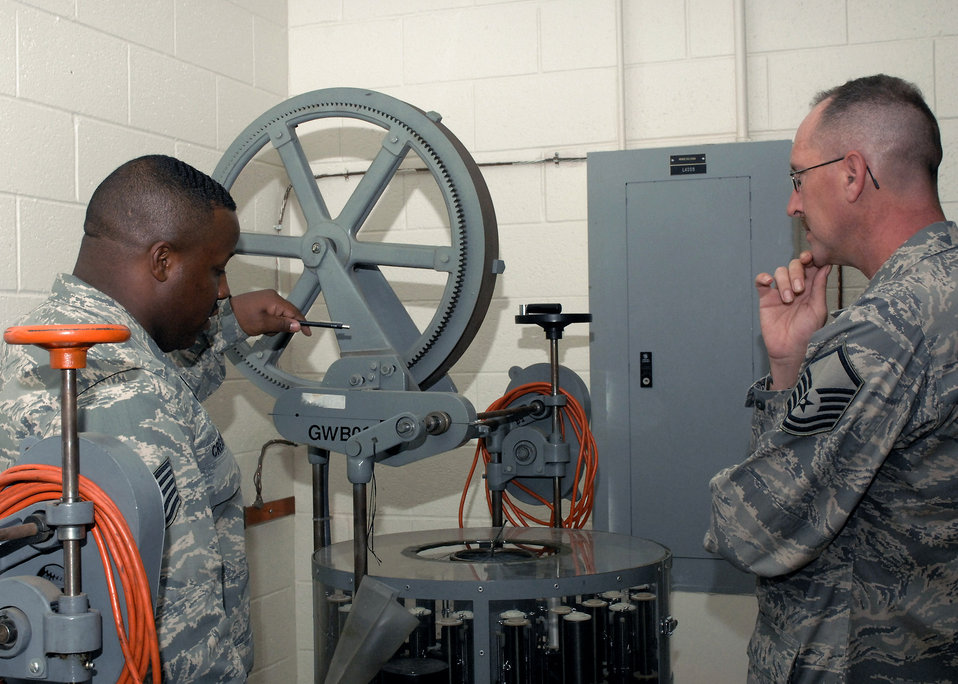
Volunteer Protection Program

Tech. Sgt. Kent Creamer shows Master Sgt. William Keely how the wire braiding machine operates. Volunteer Protection Program members and Sergeant Keely toured Cannon Air Force Base, N.M., to look at protection features on equipment being used at the base Nov. 3 to 7. Sergeant Creamer is assigned to the 27th Special Operations Component Maintenance Squadron. Sergeant Keely is assigned to the 27th Special Operations Wing Safety Office,